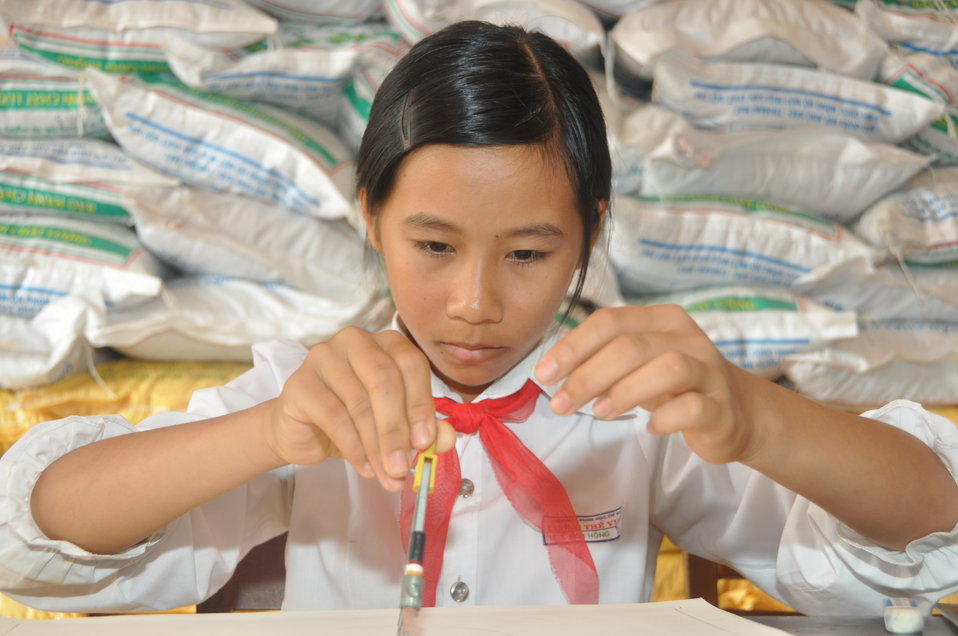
Students in Kon Tum create artwork about the importance of eye care